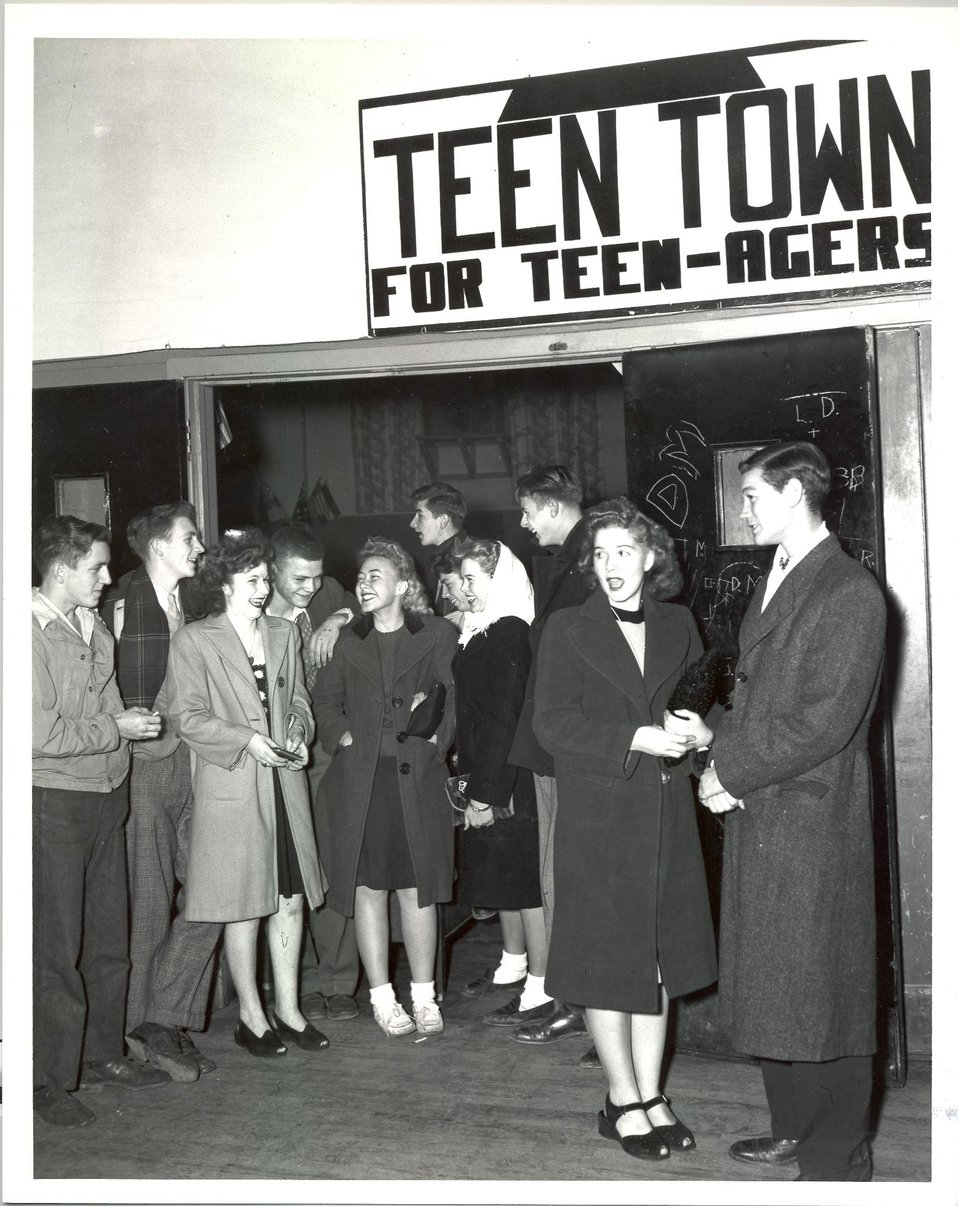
Group of Teens at Central Recreation Hall